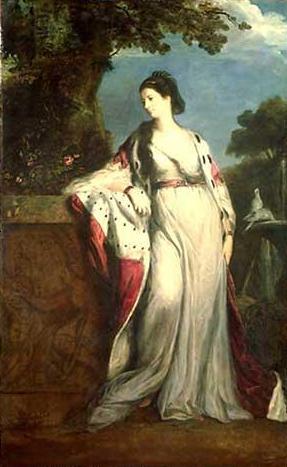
Elizabeth Gunning